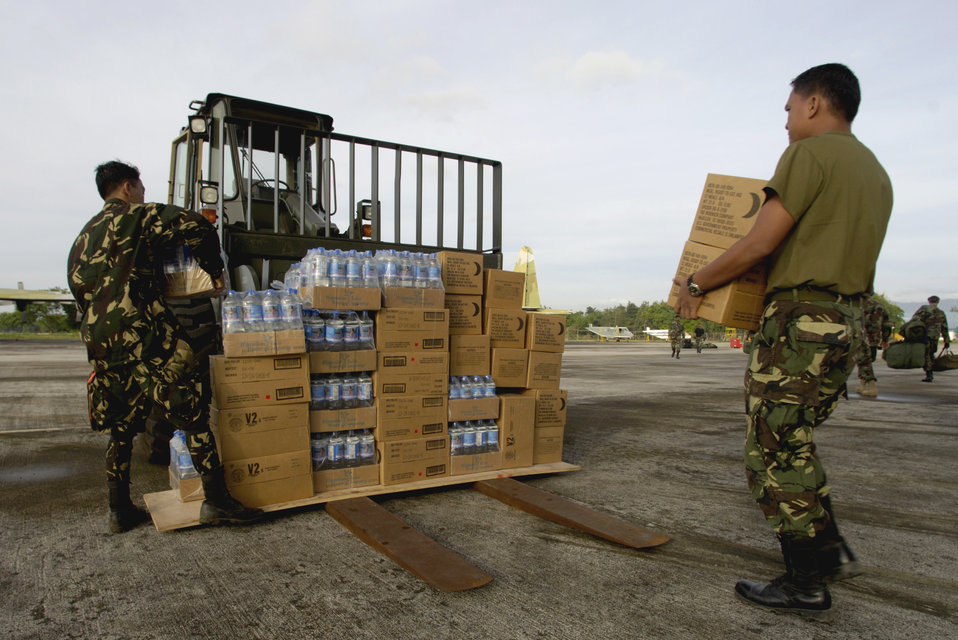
Relief mission

MACTAN AIR BASE, Philippines (AFPN) -- Philippine servicemembers download water and military rations from a C-17 Globemaster III. The composite C-17 squadron of active duty and Hawaii Air National Guard flew their first contingency response mission to deliver relief supplies to the Philippines Feb. 22.